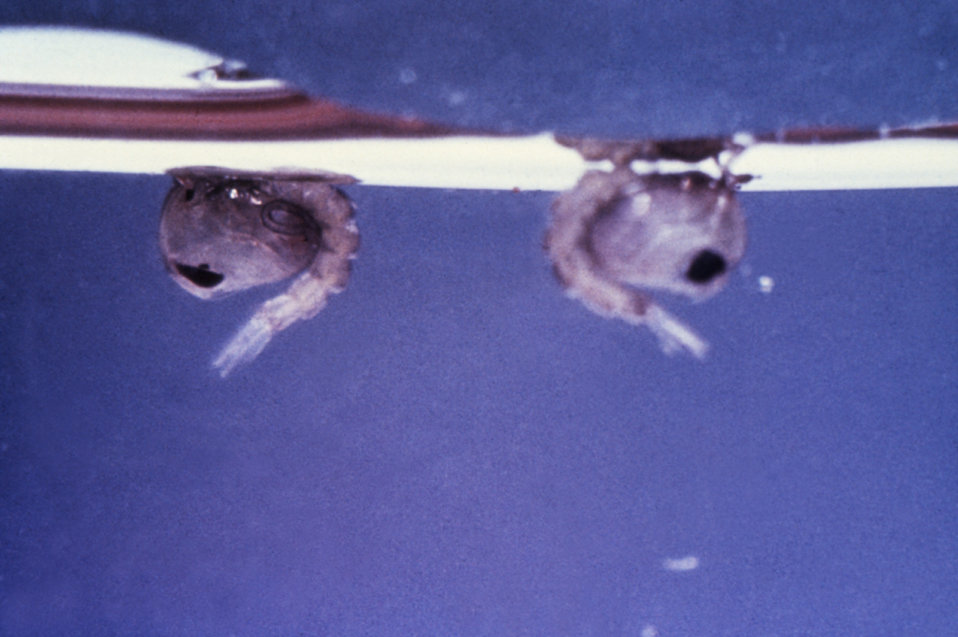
This photograph of mosquito pupae was taken during a 1972 study of disease carriers, and pests of migrant labor camps.